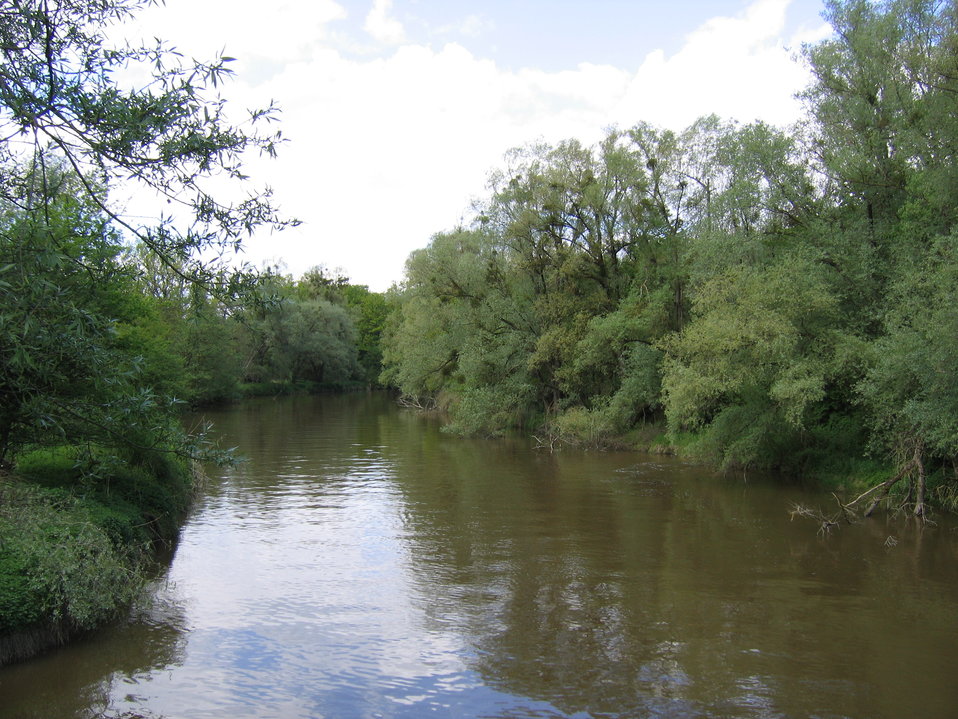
Deutsch: Deutschland - Baden-Württemberg - Bodenseekreis - Eriskirch: die Schussen im Eriskircher Ried, kurz vor der Mündung in den Bodensee